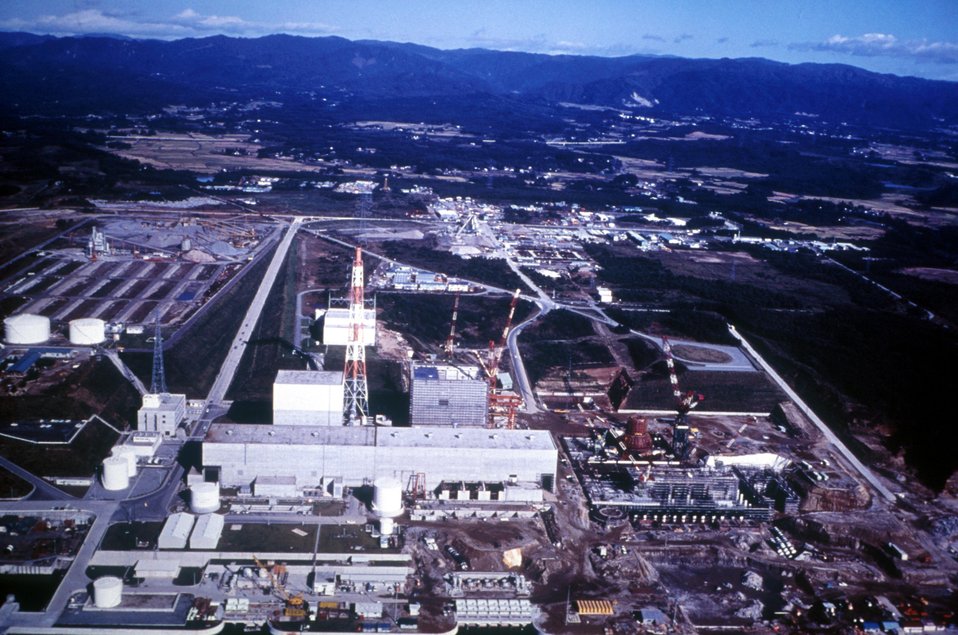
Tokyo Electric Power Co., Fukushina Nuclear Power Station on the Pacific Ocean, 160 miles North of Tokyo, 1.2 square mile site. Japan. c. 1971